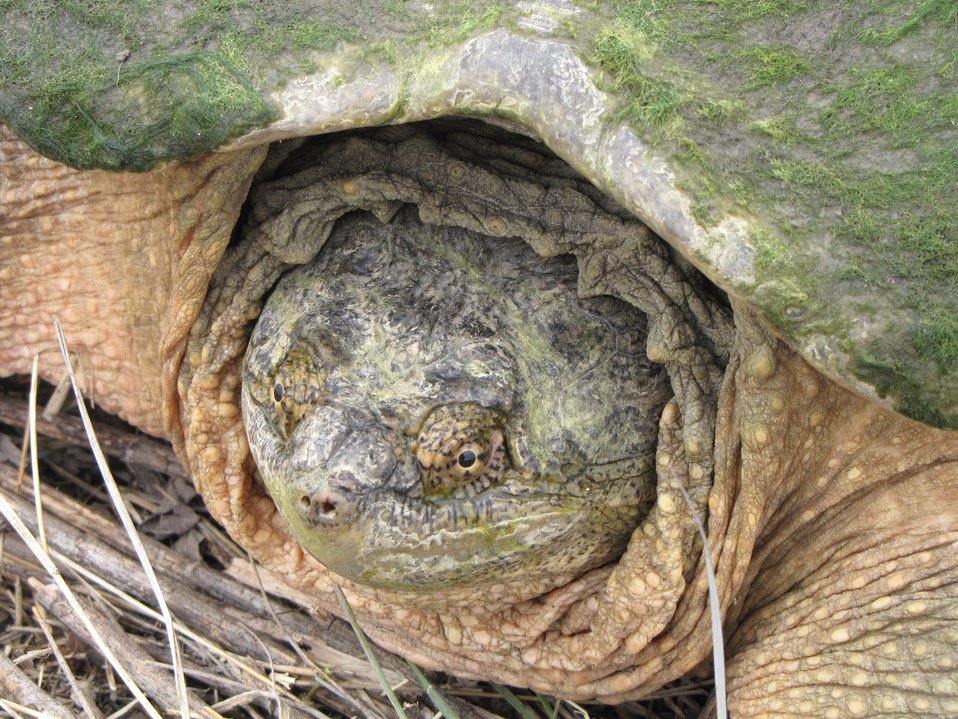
Snapping Turtle

This snapping turtle passed through an irrigation canal system and ended up on a Wetlands Reserve Program project in Phelps County, Nebraska. He/she was mossy and agile, so we didn't check its gender!

Credit: Laurel Badura / USFWS

Photo Contest Entry #187